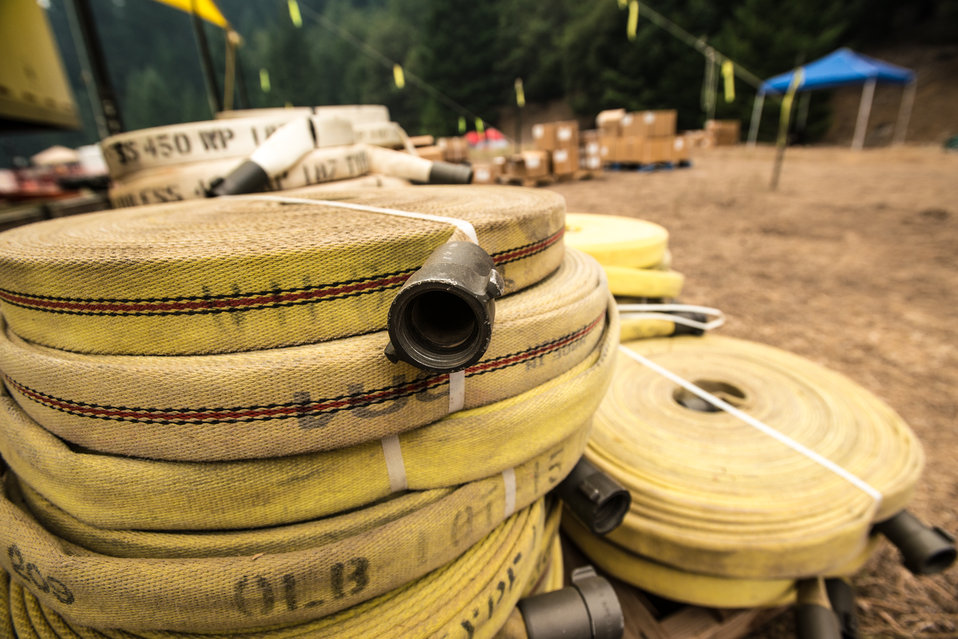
Serviceable hand lines (fire hose) available for firefighters at the Salmon River Complex Fire burning northwest of Sawyers Bar and west of Etna and Yreka, CA in the Klamath National Forest, on Tuesday, Aug. 6, 2013. It is vital that when a firefighter needs fire resistant clothing, a Mccloud Tool, Pulaski Axe, Combi Tool, pumps, connectors and hoses to draw water from a portable reservoirs to pressurize hand line (fire hoses), they go to this centralized point to get readily available item for issue or replacement as needed. These supplies have been shipped from the National Interagency Supply Cache System depots and/or other caches to this and other fires across the nation.